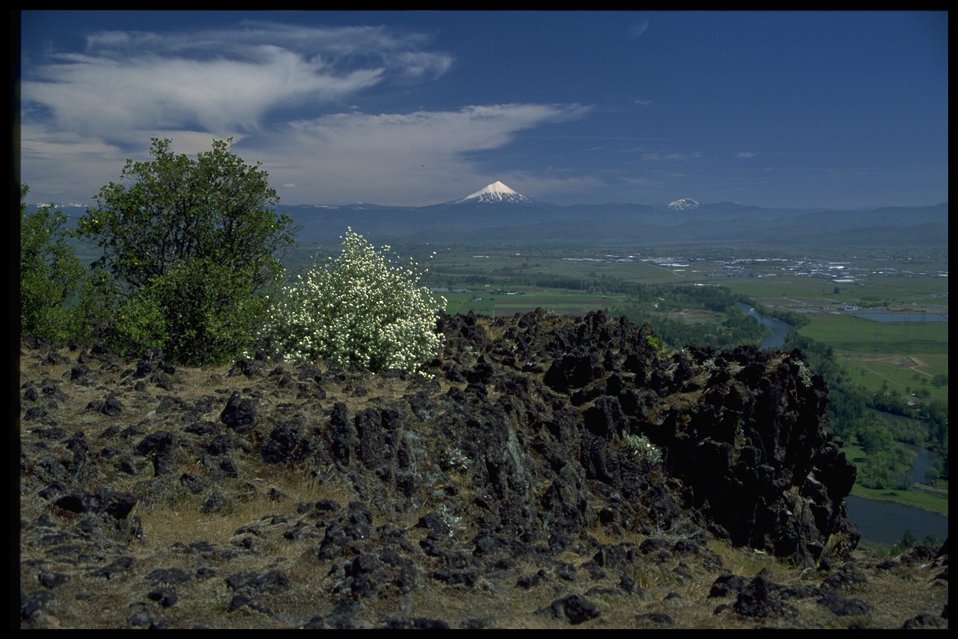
Farshot of service berry, Amelanchier alnifolia.